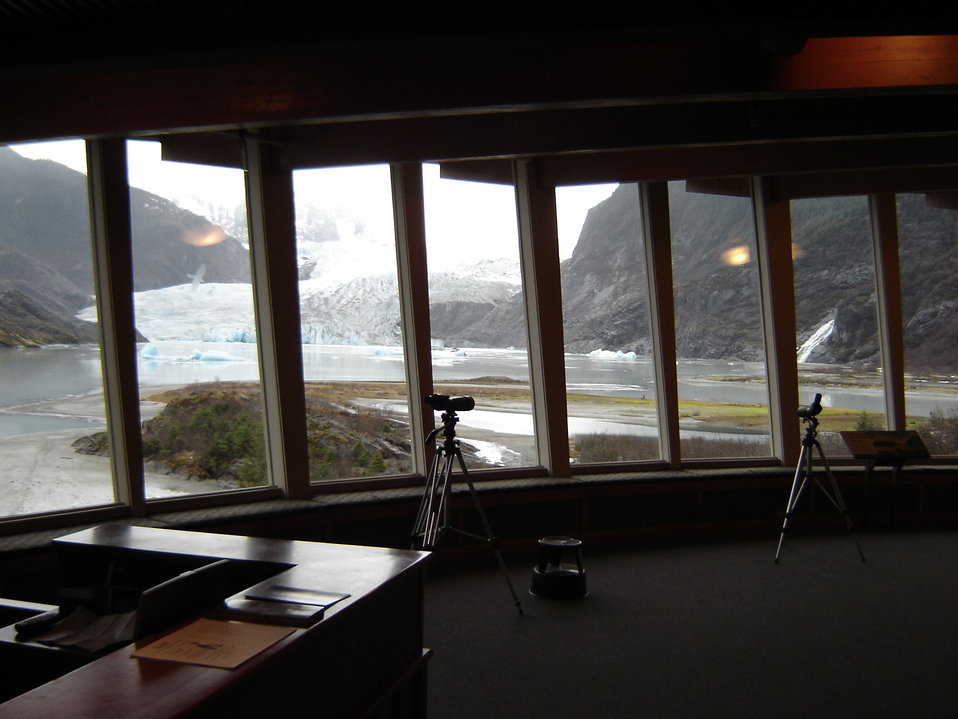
Mendenhall Glacier from the Visitor's Center

The history, science and makeup of the Mendenhall Glacier is presented in the site's expansive visitors center, which also provides panoramic views of the glacier and Mendenhall Lake.